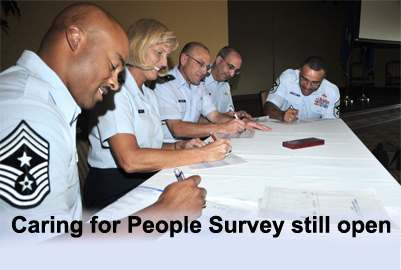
Caring for People Survey